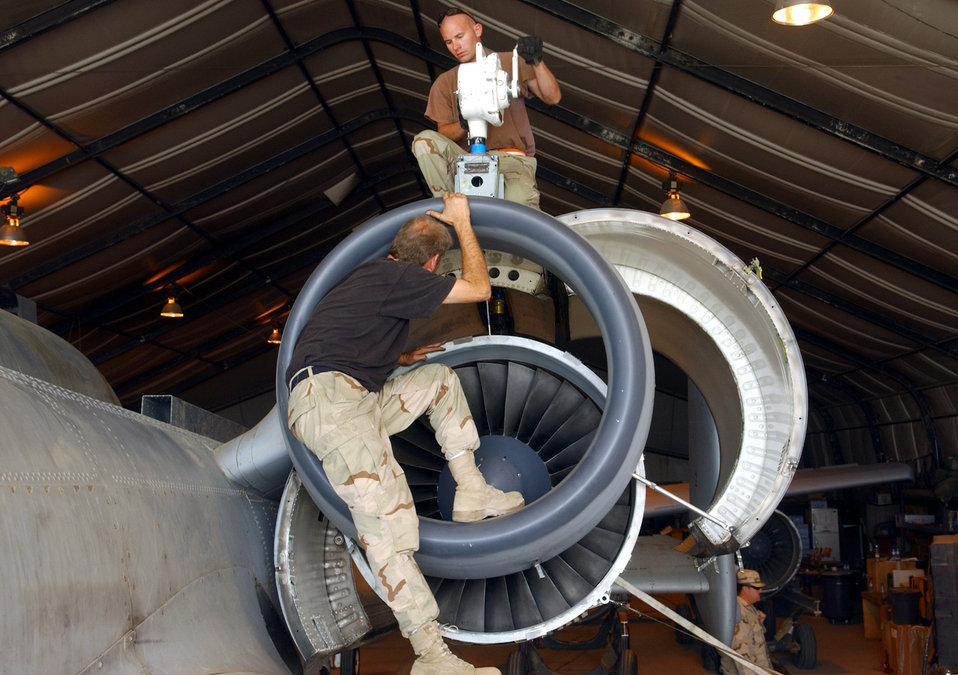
The swap

BAGRAM AIR BASE, Afghanistan -- Staff Sgt. Eric Lundberg (top) and Tom Ross maneuver an A-10 Thunderbolt II engine into place during an engine swap. Both men are deployed as part of the 354th Expeditionary Aircraft Maintenance Squadron.